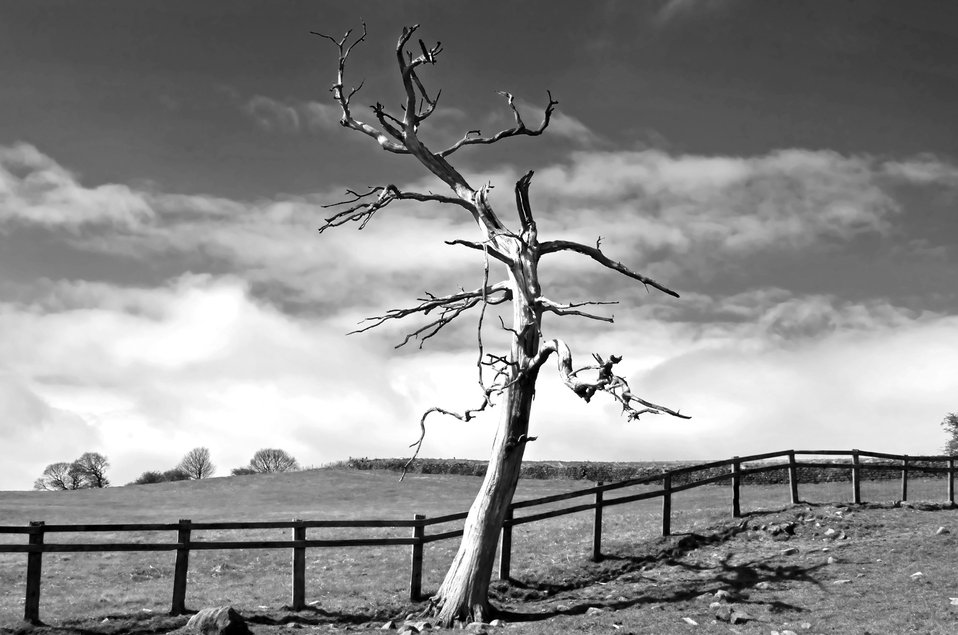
Tree

Old tree - black and white.